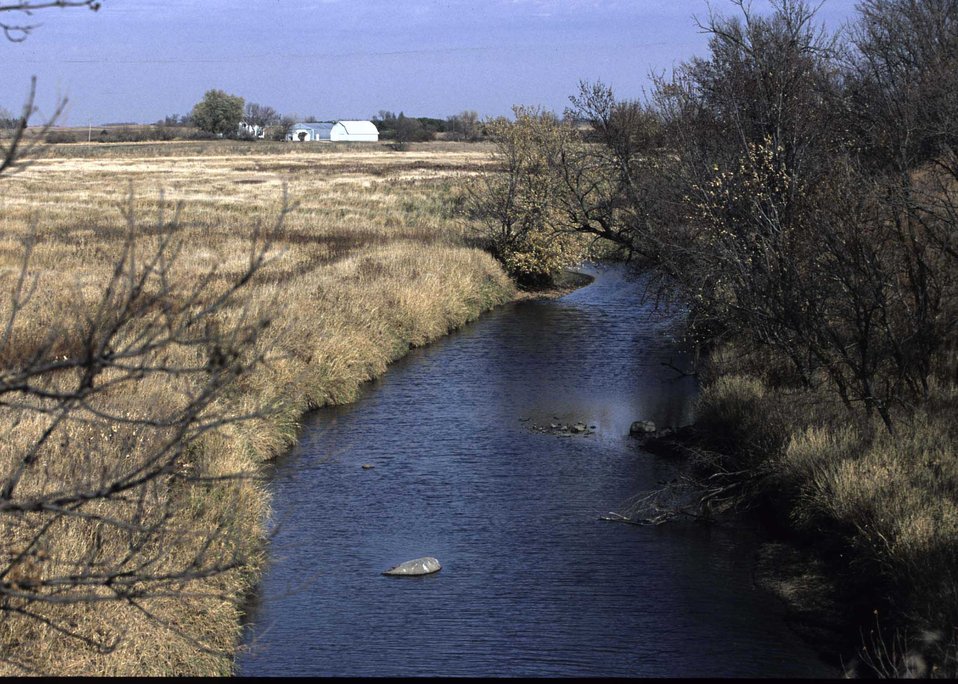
Stream in Kossuth County, Iowa, protected by native grass plantings in the Conservation Reserve Program.